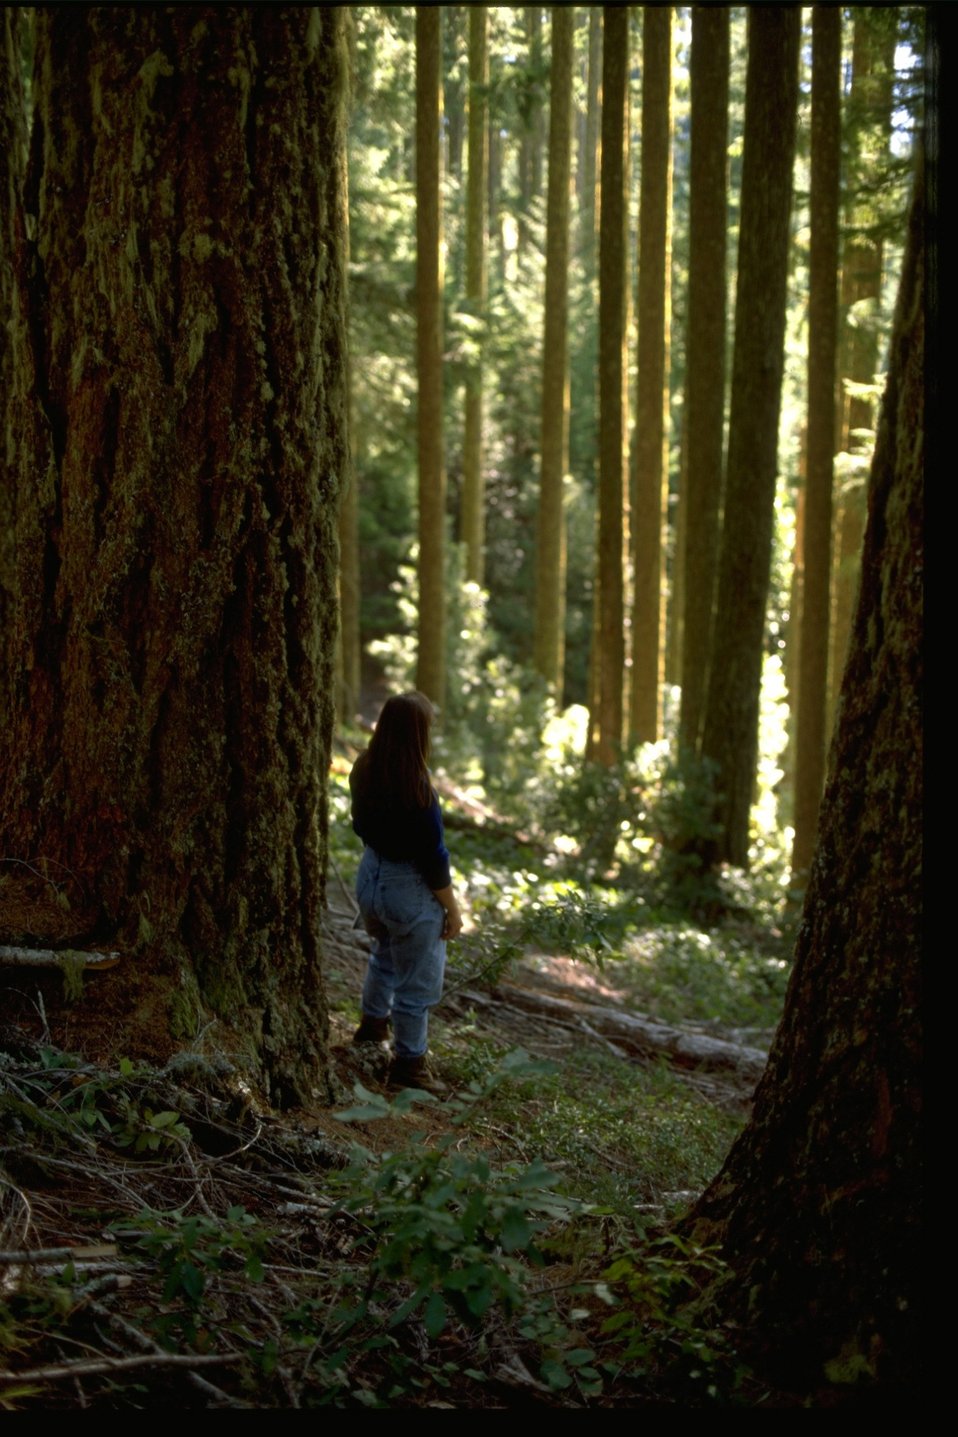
Old growth forest in the Glendale Resource Area.